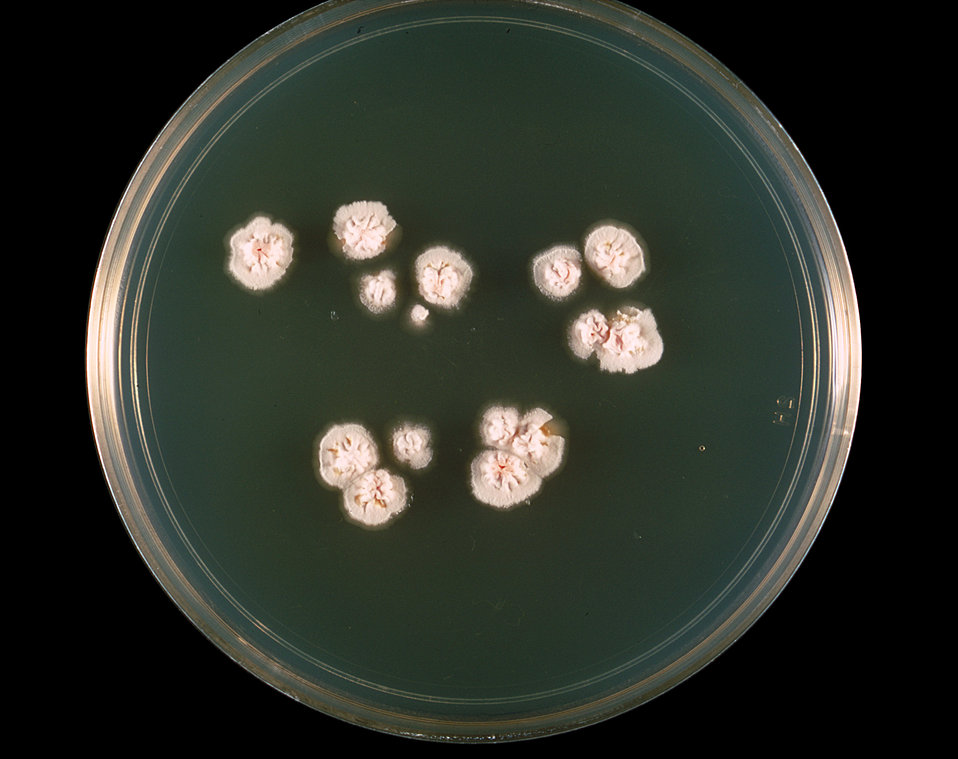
This is a plate culture of the bacteria Nocardia asteroides grown on 7H10 agar medium at 37� C.